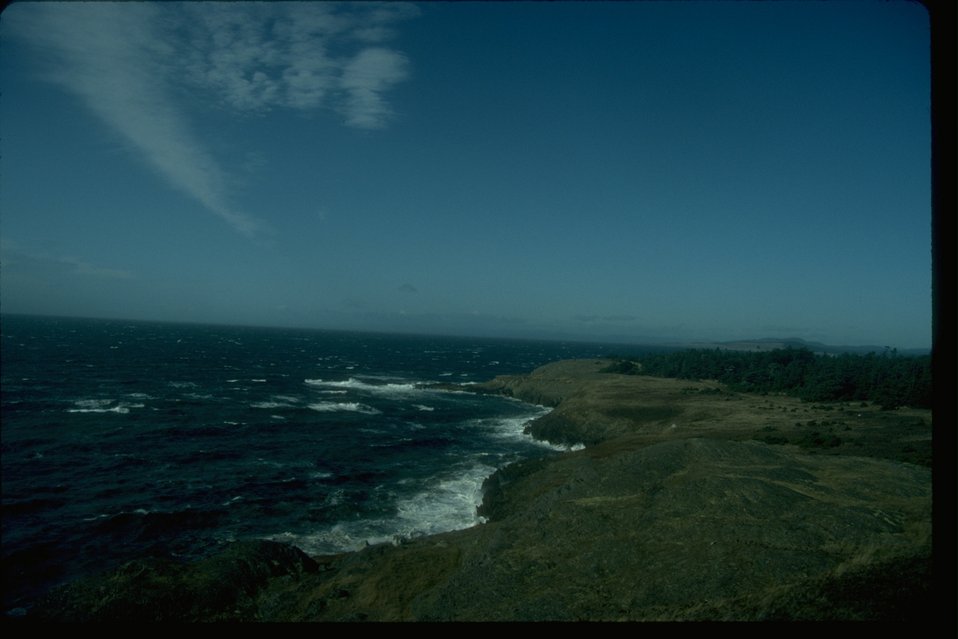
Iceberg Point on Lopez Island in San Juan County, Washington: Area of Critical Environmental Concern.